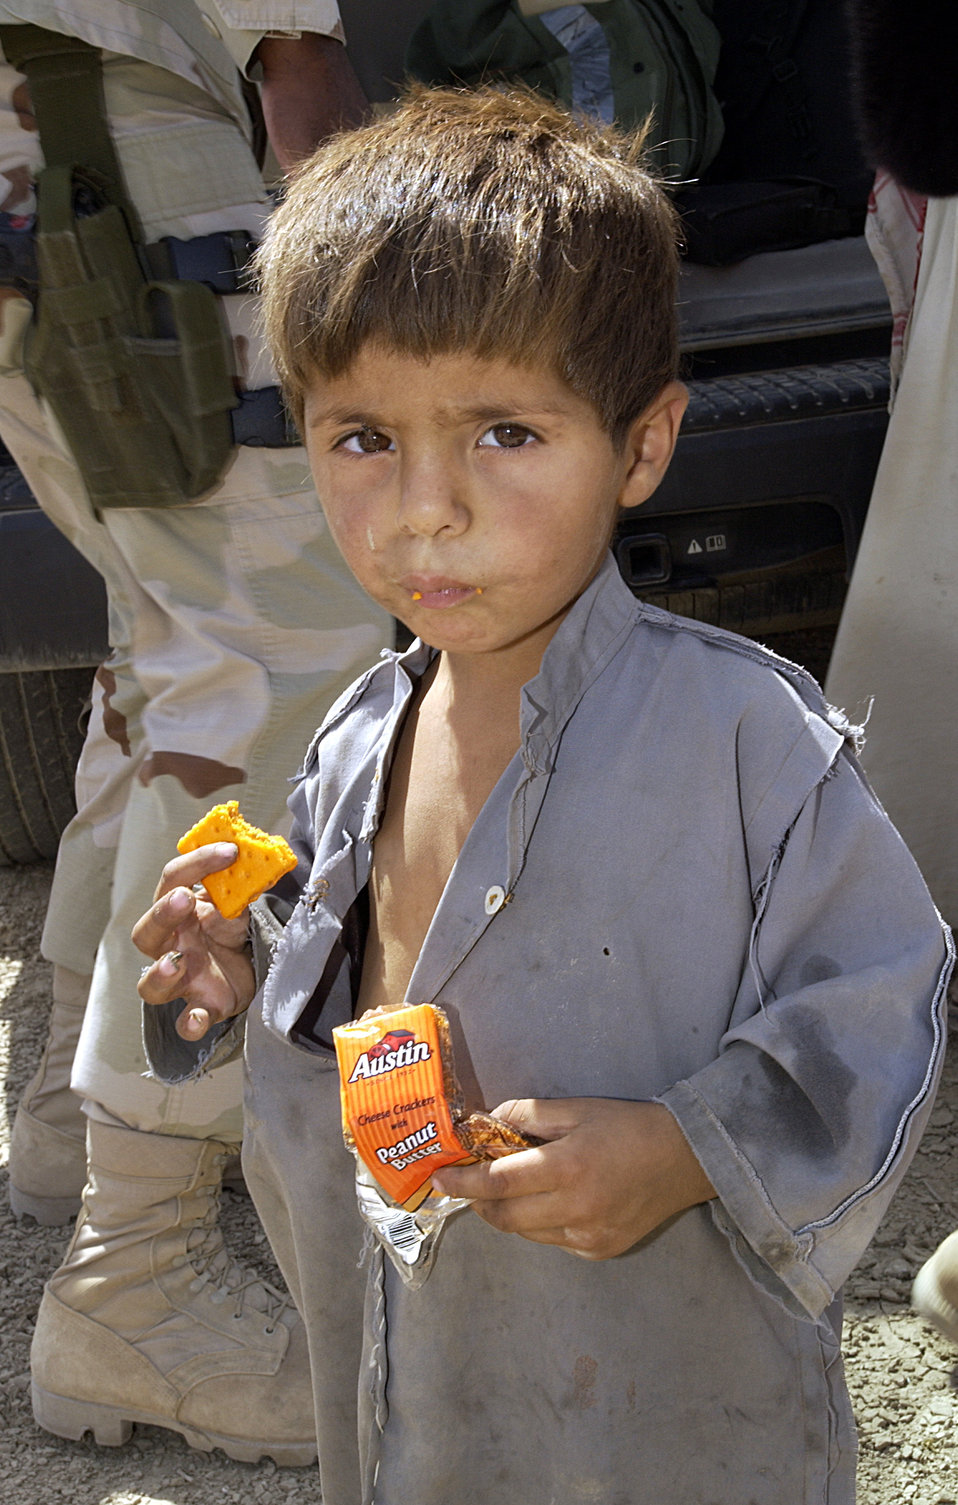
Bringing hope

TALLIL AIR BASE, Iraq -- An Iraqi boy eats crackers given to him by members of the 407th Expeditionary Security Forces Squadron who are supporting Operation Reachout here May 7. Operation Reachout is a program started by security forces members to build a friendship with the surrounding Bedouin families. Security forces people visit these families weekly, bringing them food, water and candy for the children.